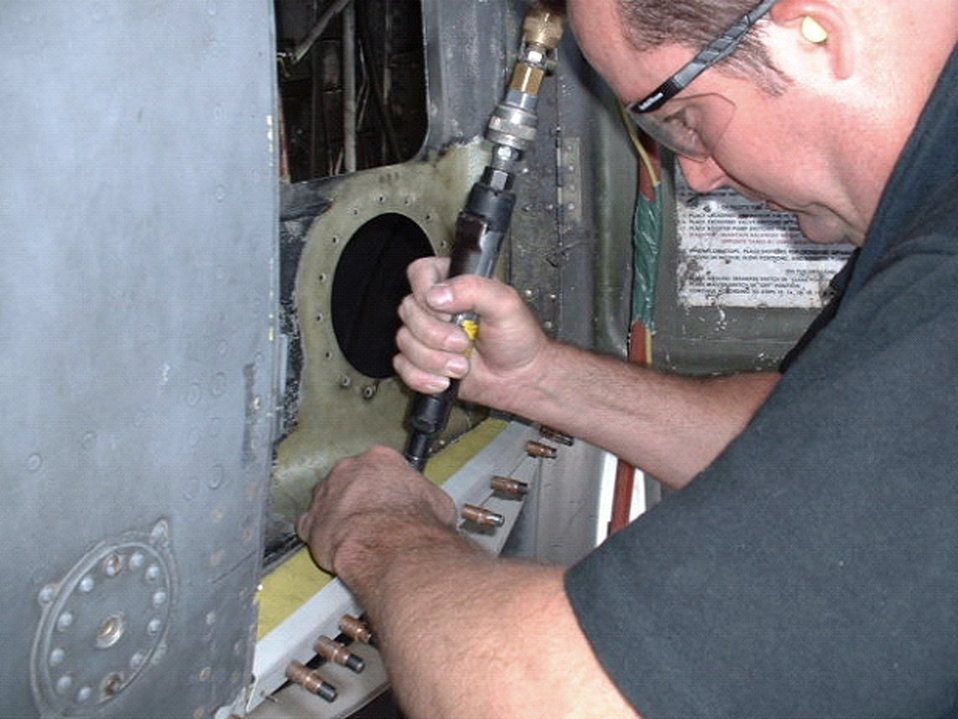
C-130 maintainers accomplish 'in-field' depot maintenance

KARSHI-KHANABAD AIR BASE, Uzbekistan -- Tech. Sgt. Jimmy Shaw works on a piece of framework on a damaged C-130 Hercules as part of an in-field depot maintenance effort by maintainers here. He is a C-130 structural craftsman deployed from the Texas Air National Guard at Fort Worth.